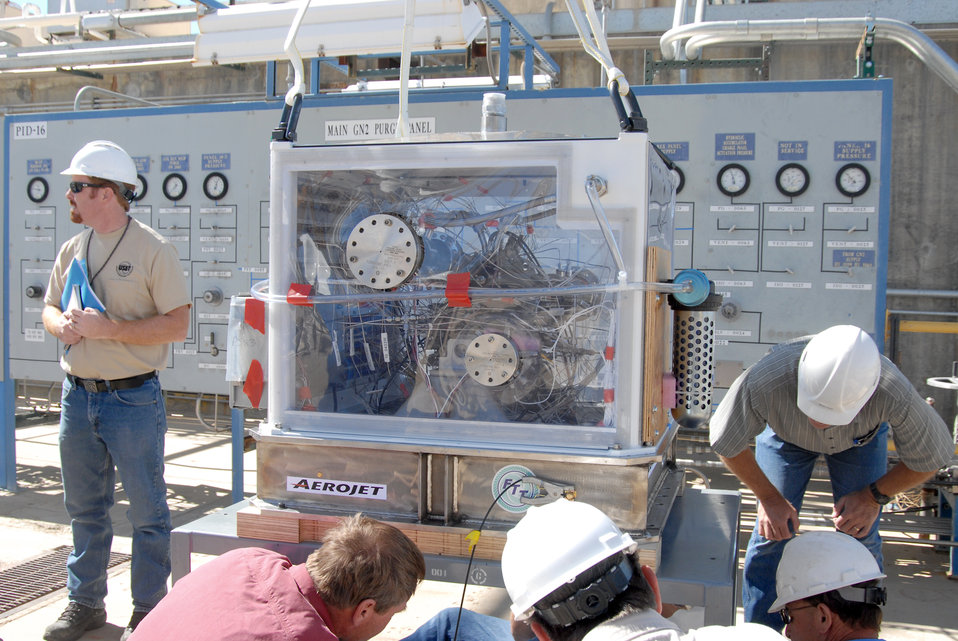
Air Force Research Laboratory officials launch new age in testing

Air Force Research Laboratory workers make necessary adjustments before lifting the Upper Stage Engine Technology turbo pump with a crane to attach it to AFRL's 2A rocket test stand. The USET turbo pump produces about 4,000 horsepower and will propel the upper stage portion of a rocket into space once the lower stage booster is detached.